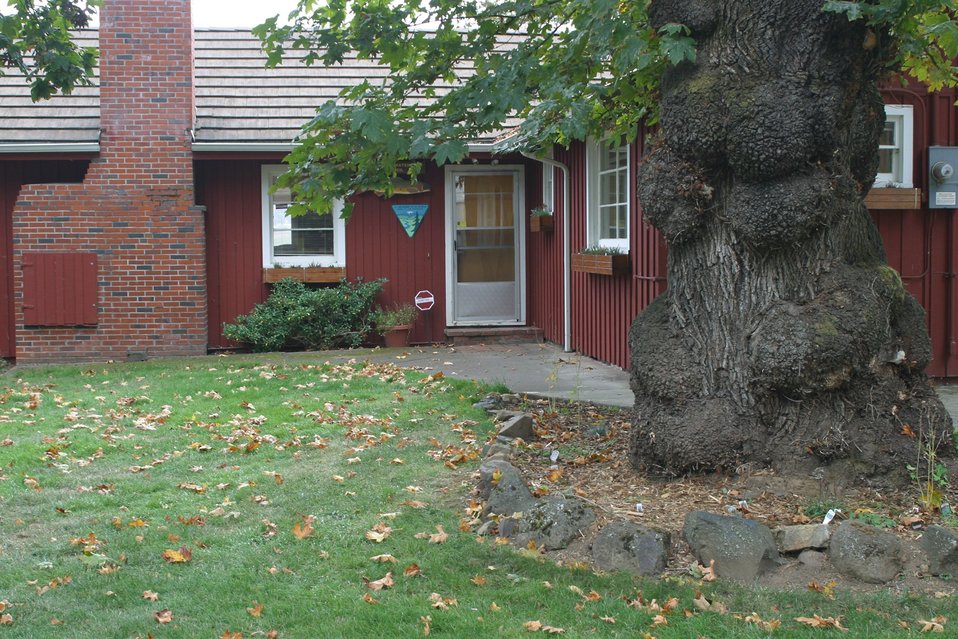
BLM's West Eugene Wetlands Project Office is centrally located near the Amazon and Willow Creek confluence in West Eugene.